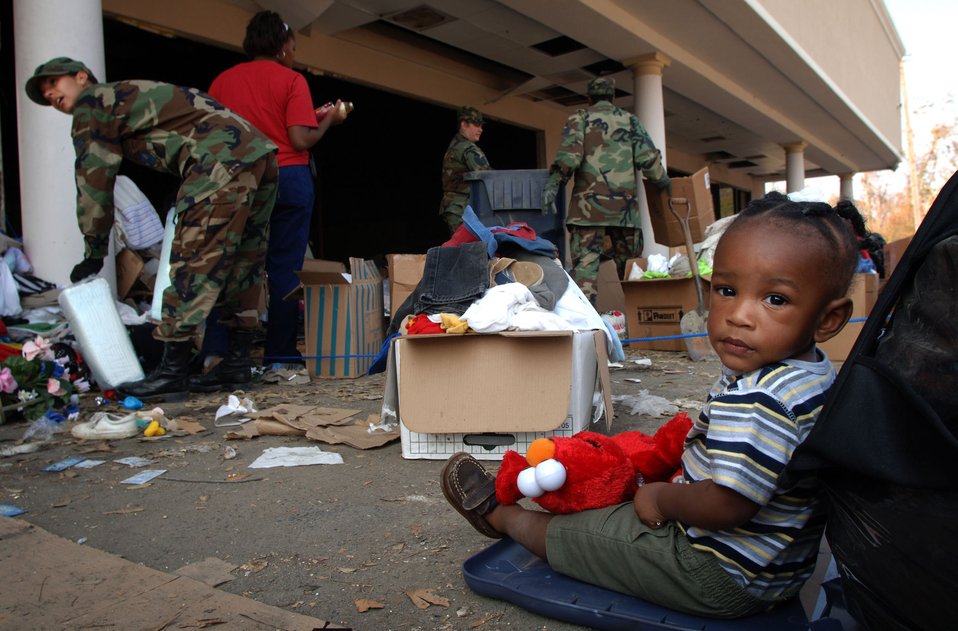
Sorting things out

BILOXI, Miss. -- Senior Airman Aidaliz Lagueux and Tech. Sgts. Carolyn Farrell and Dawn Daniels help sort out relief supplies as 11-month-old Nasier Dixon waits for his mother to search for children's clothing. Nasier and his mother, Ashea, lost everything to floodwater damage from Hurricane Katrina's devastating storm surge. The three Airmen are from the 305th Mission Support Squadron at McGuire Air Force Base, N.J.